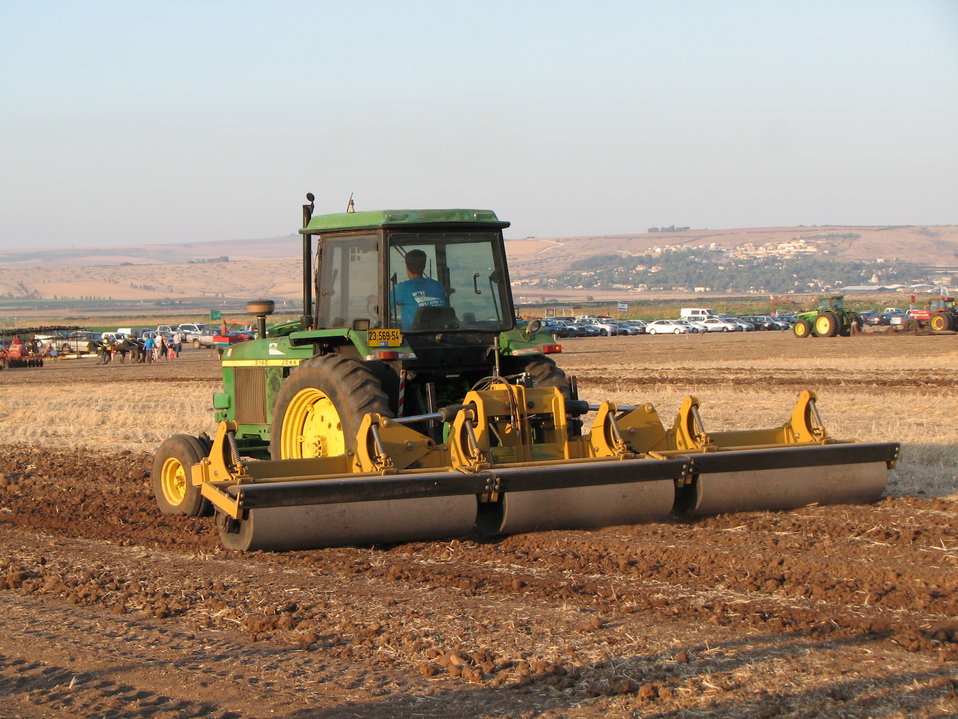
A John Deere 3140 tractor עברית: מעגילה בתצוגת תכלית